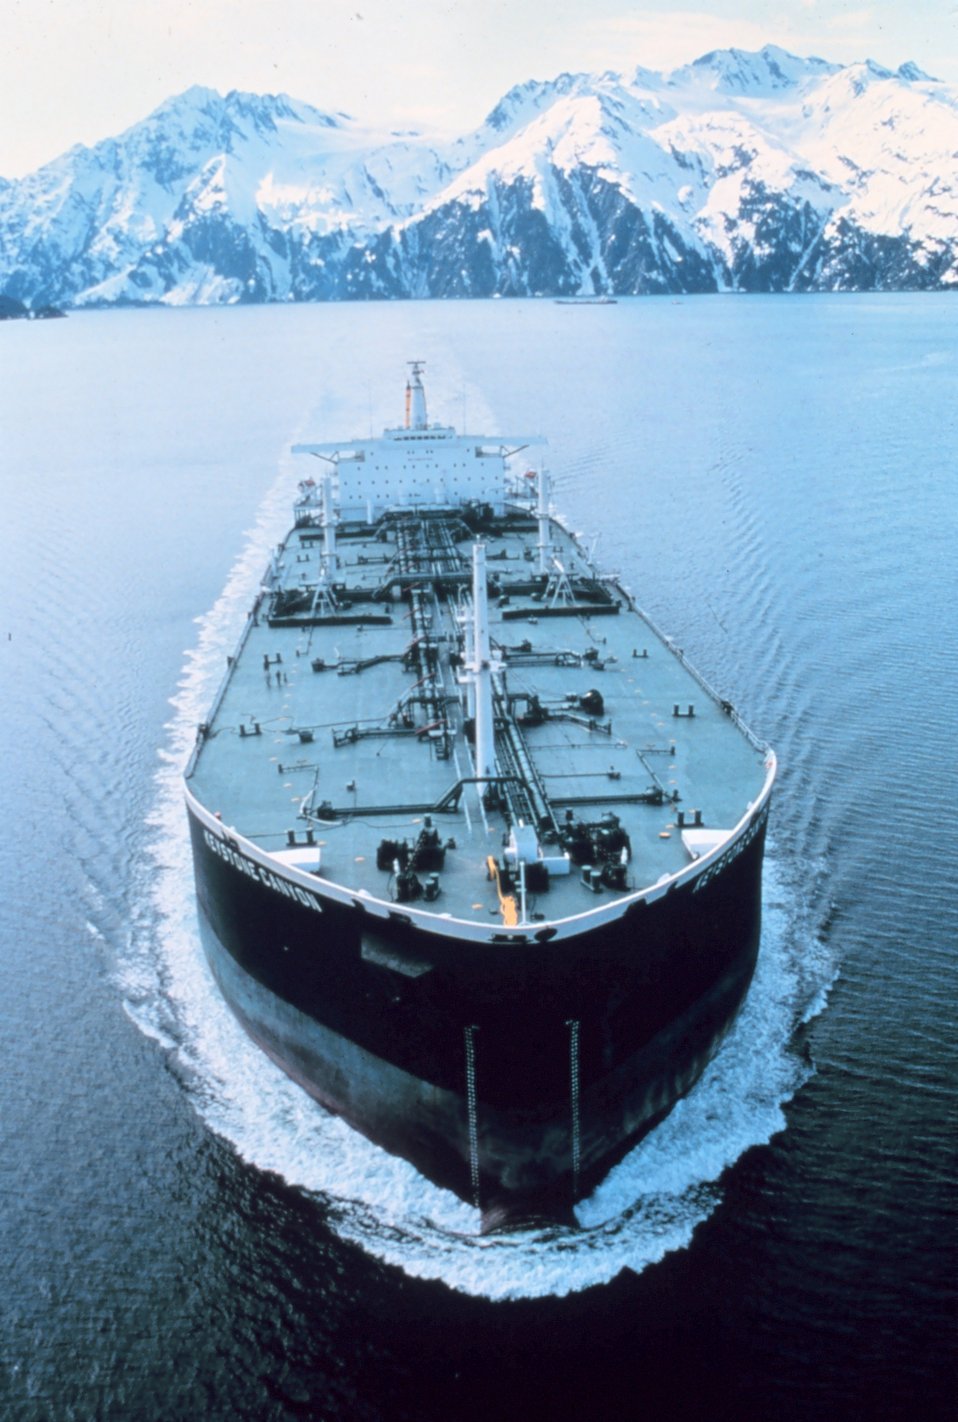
Tanker KEYSTONE CANYON leaving Valdez, the terminus of the Alaska Pipeline.